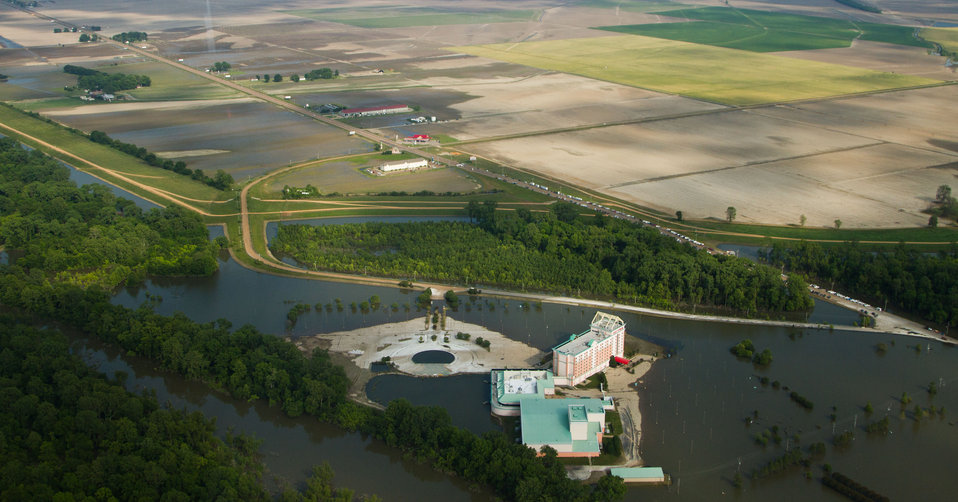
Aerial view of some of the casinos in Tunica, MS. Surrounded by flood waters from the Mississippi River, on Thursday, May 19, 2011. Aerial platform was a UH-60 Blackhawk commanded by Col. Kennedy and his flight crew from the Army Aviation Support Facility #1 at Hawkins Field in Jackson.